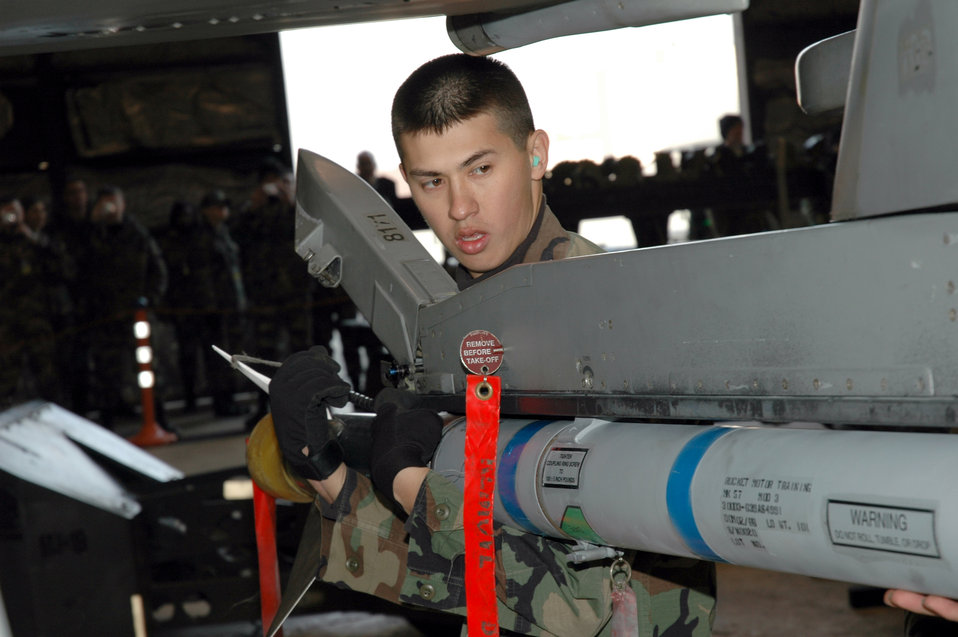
A lot of loading

OSAN AIR BASE, South Korea -- Senior Airman Jerry Rose helps his team load a 250-pound AIM-9 Sidewinder missile on an F-16 Fighting Falcon here recently. He is assigned to the 51st Aircraft Maintenance Squadron.